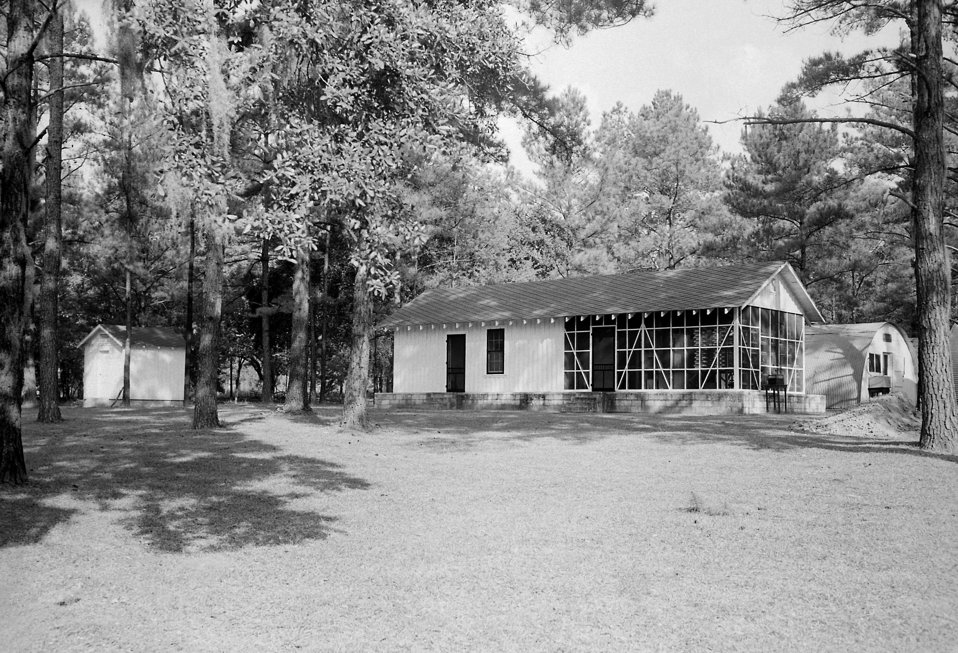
MCWA Building (Malaria Control in War Areas) in Newton GA.